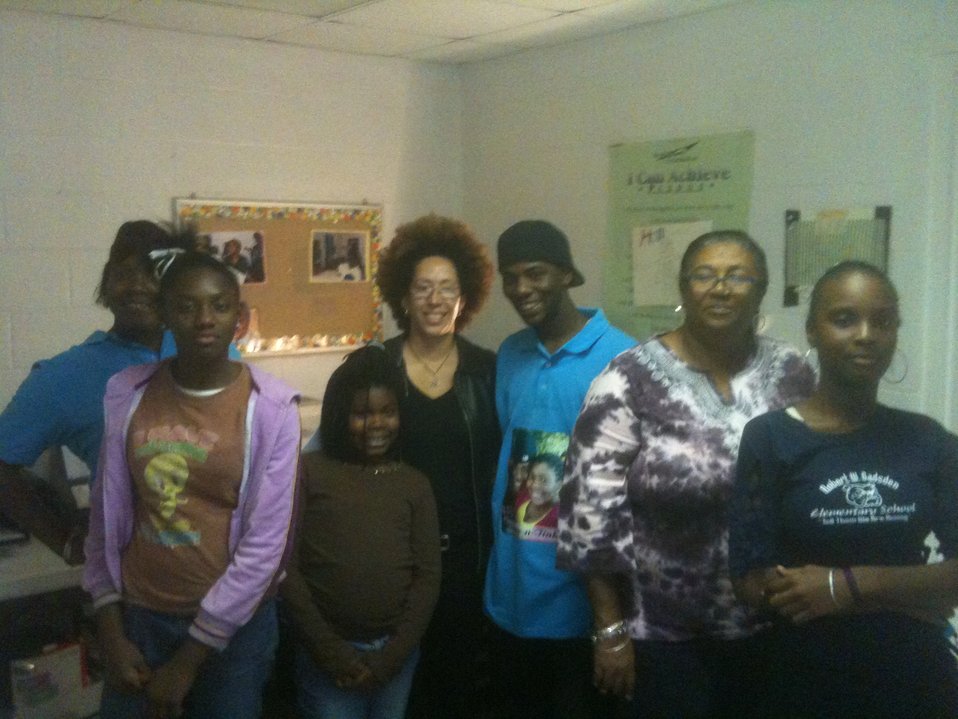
2010 NIDA Drug Facts Event in Savannah GA

NIDA grantee Dr. Karla-Sue Marriott from Savannah State University (fourth from right) spoke to some very enthusiastic kids at the Savannah Boys and Girls Club in Savannah, Georgia. Second from right is Ms. Pamela Jones from the Boys and Girls Club.